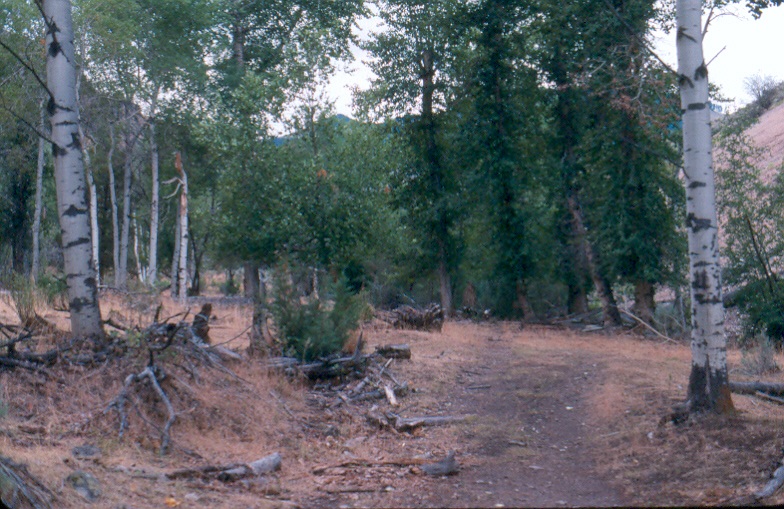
Roads Recreation Erosion Salmon Field Office UCSC Upper Columbia Salmon Clearwater District